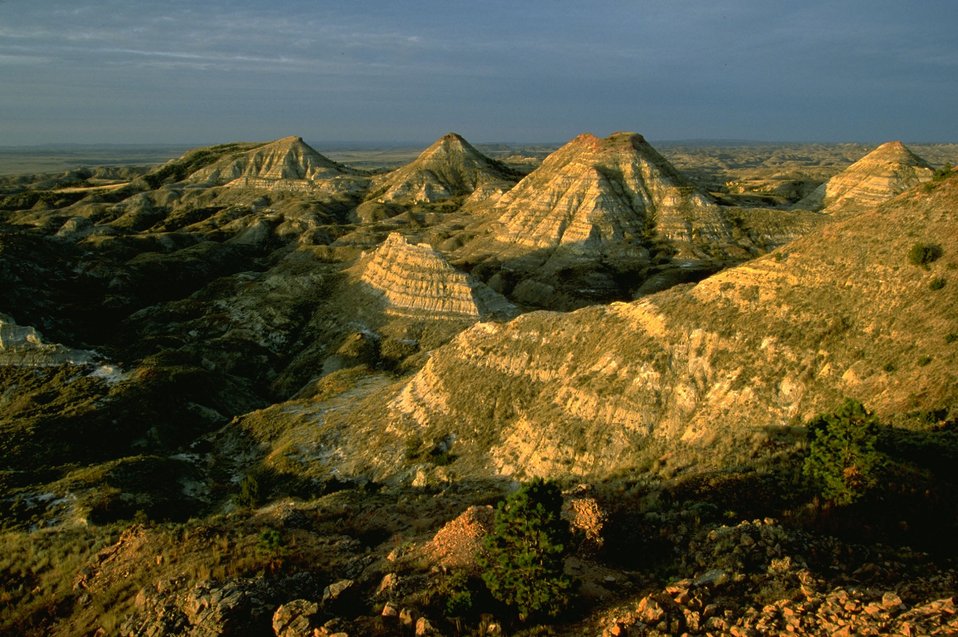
Terry Badlands Wilderness Study Area